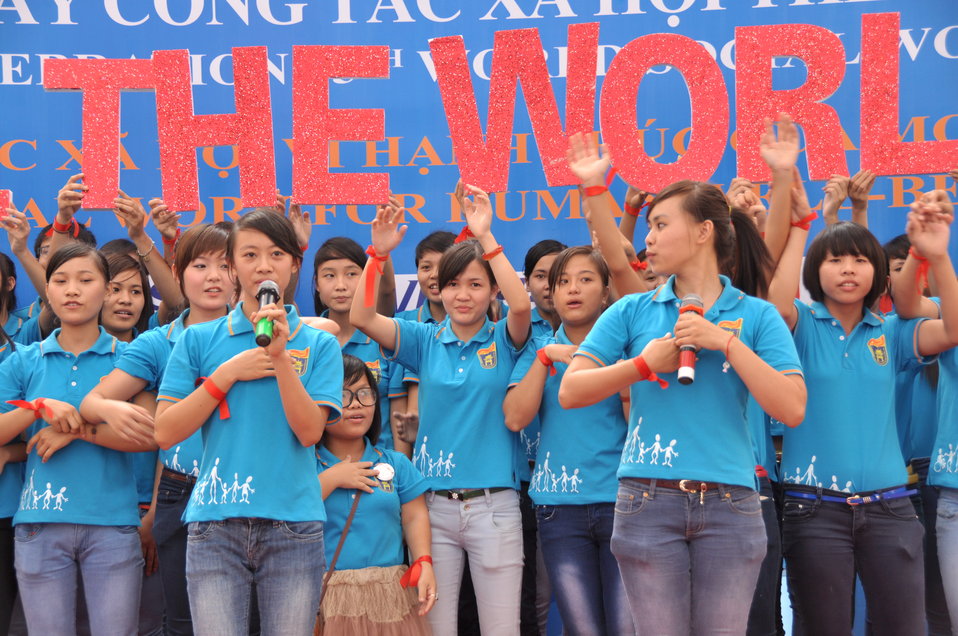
USAID Supports Social Work Education

Photo: @USAIDVietnam, November 9, 2012